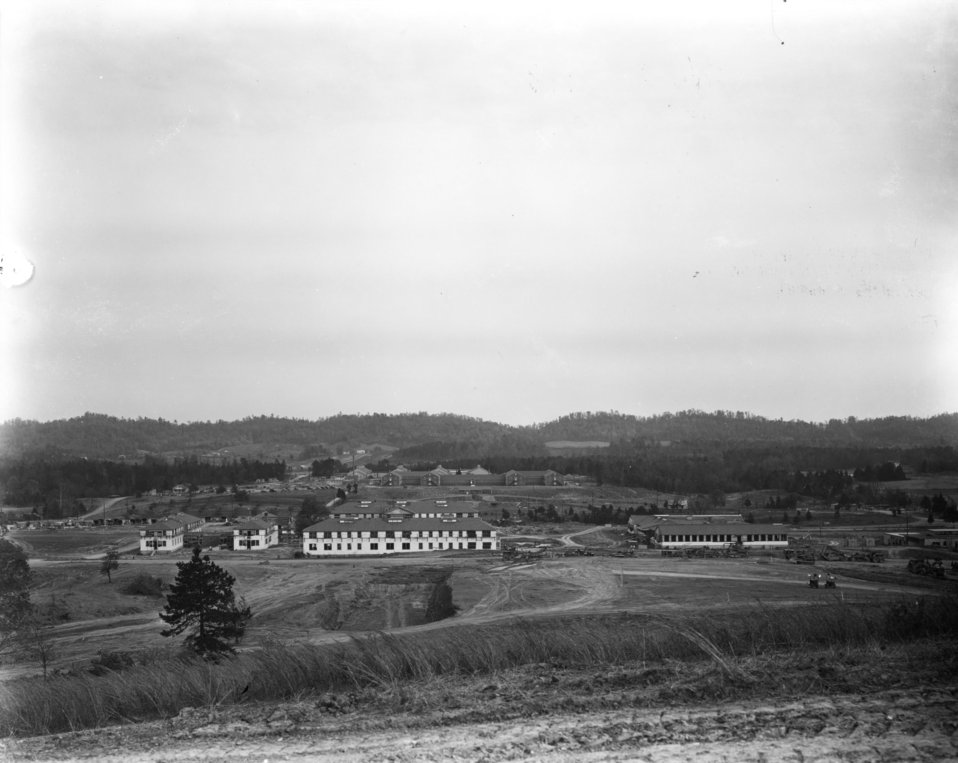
Construction activity at Oak Ridge